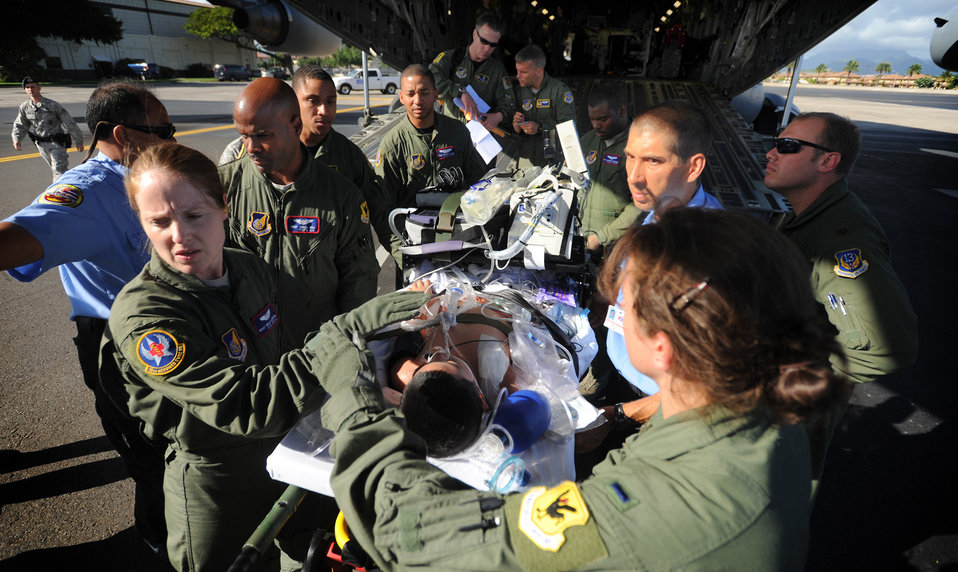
Life-saving mission

Members of the 18th Aeromedical Evacuation Squadron Det. 1 and 13th Air Force surgeon general's office transport a critically ill patient out of the rear of a C-17 Globemaster III May 22, 2011, at Joint Base Pearl Harbor-Hickam, Hawaii. The patient was aeromedically evacuated from Lyndon B. Johnson Tropical Medical Center in Pago Pago, American Samoa, after he aspirated following a seizure that left him completely reliant on a ventilator to breathe. After arriving in Hawaii, the patient was transferred to Tripler Army Medical Center, Hawaii.